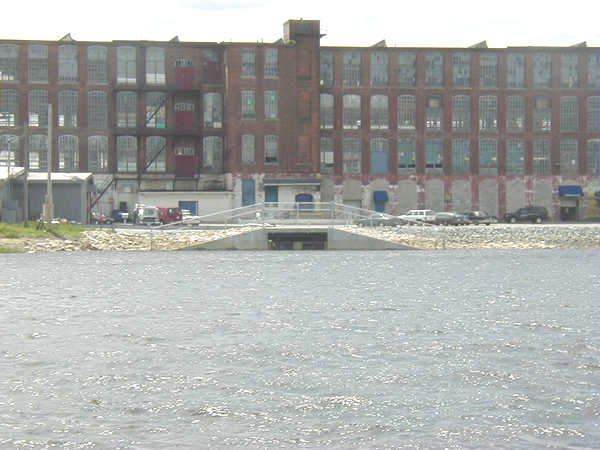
The final combined sewer overflow outlet

This CSO is located in front of the new Market Basket now standing in place of the former Fairhaven Mills complex shown in this photo.